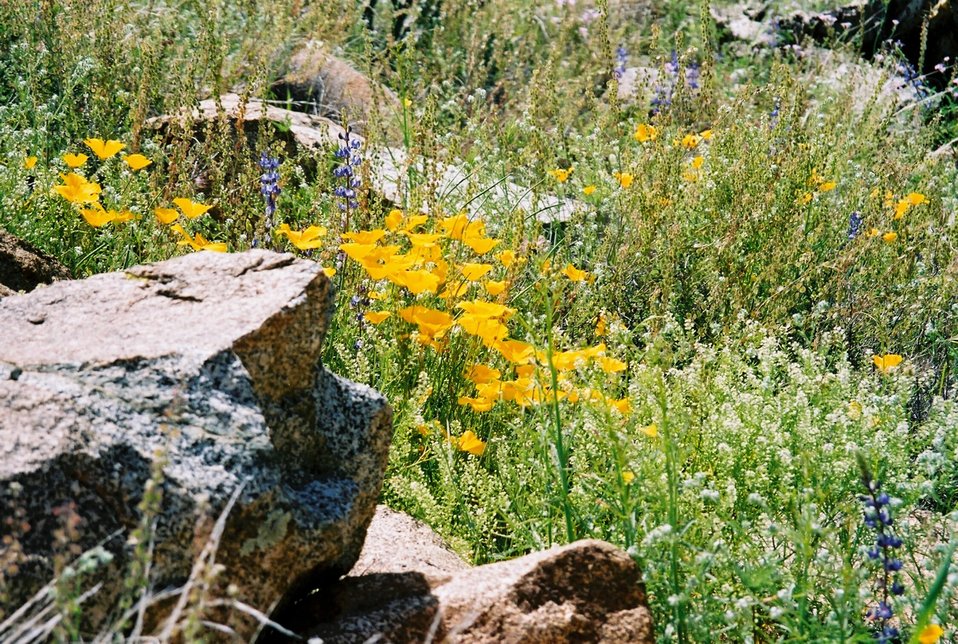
Many different kinds of beautiful wildflowers grow in the Agua Fria National Monument.